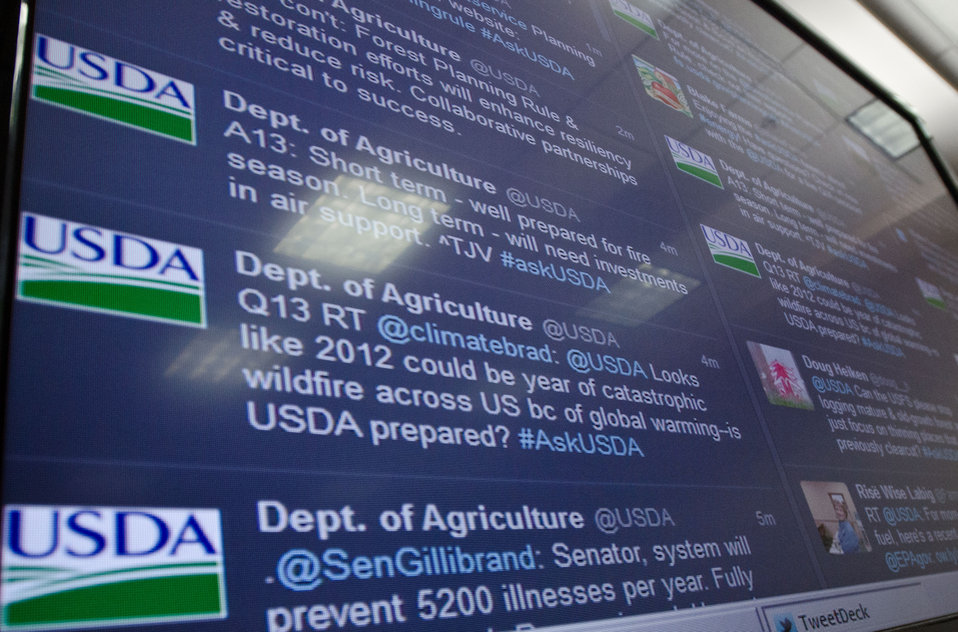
Agriculture Secretary Tom Vilsack responded to questions during the first live 'Twitter' session held at the U.S. Department of Agriculture in Washington, D.C., on Thursday, April 4, 2012.